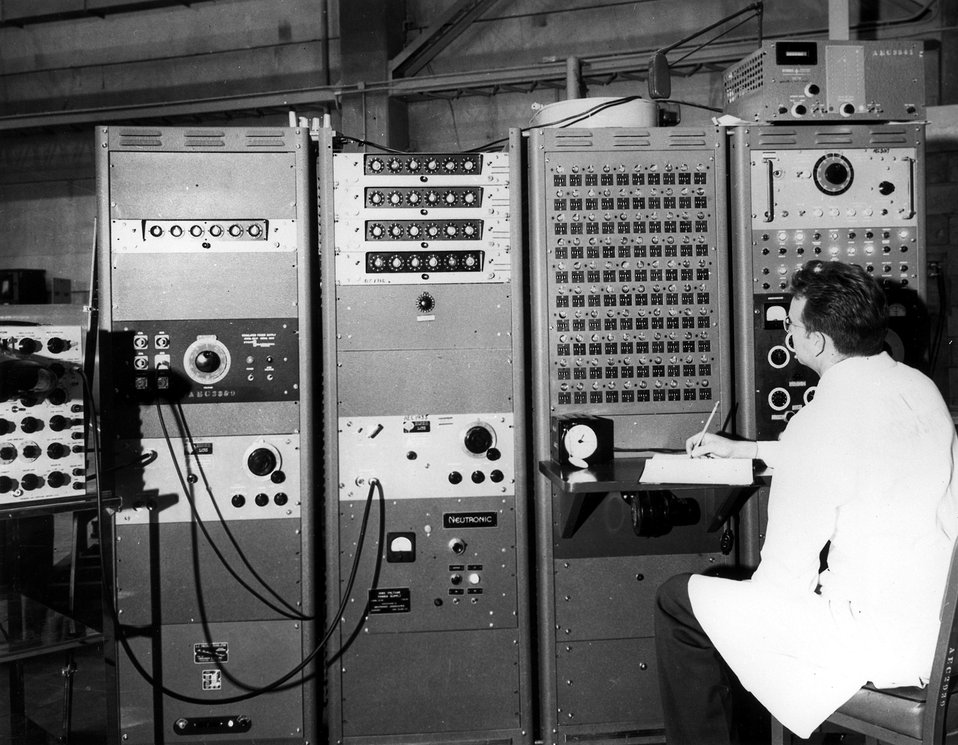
National Reactor Testing Station, Idaho... Recording and control panels for the neutron chopper or time-of-flight spectrometer, at the Materials Testing Reactor. Circa 1954